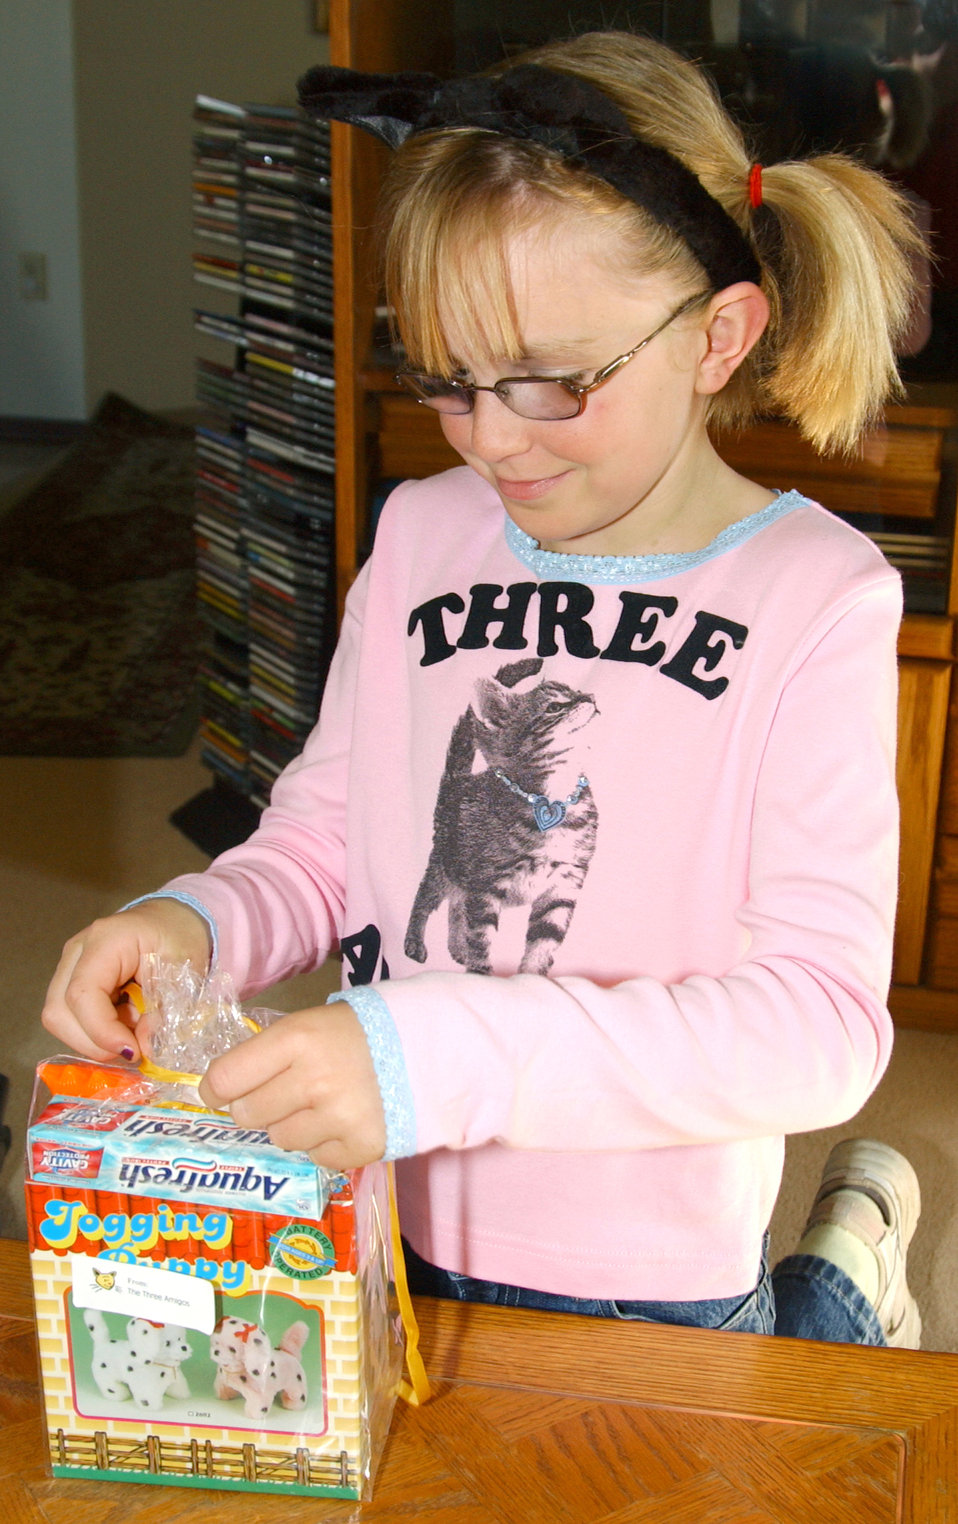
Three children give to peers at local hospitals

TORRANCE, Calif. -- Sydney Beres puts the finishing touch on a gift pack for the children at Harbor UCLA Medical Center here. Sydney is one of the